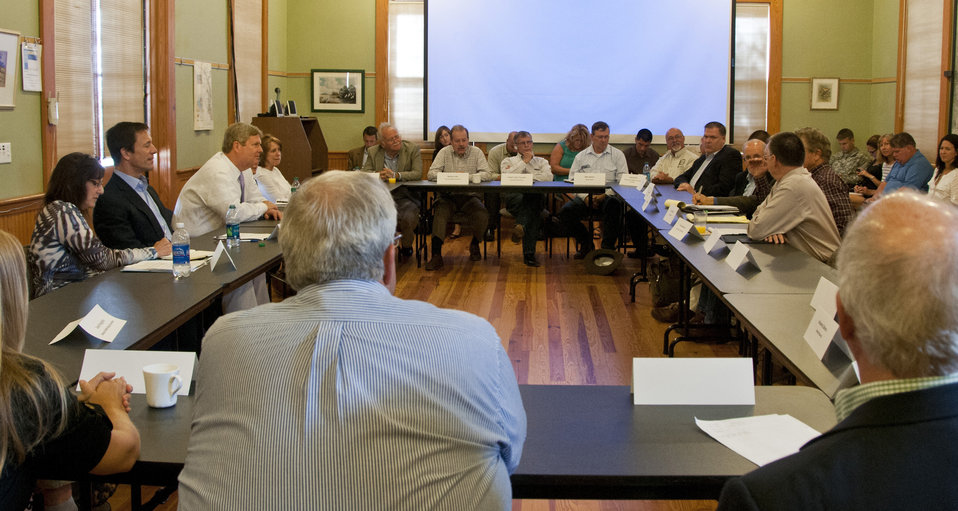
U.S. Department of Agriculture Secretary Tom Vilsack holds roundtable discussions with conservation groups, ranchers and agency representatives in Kissimmee, FL., on Friday, July 13, 2012.